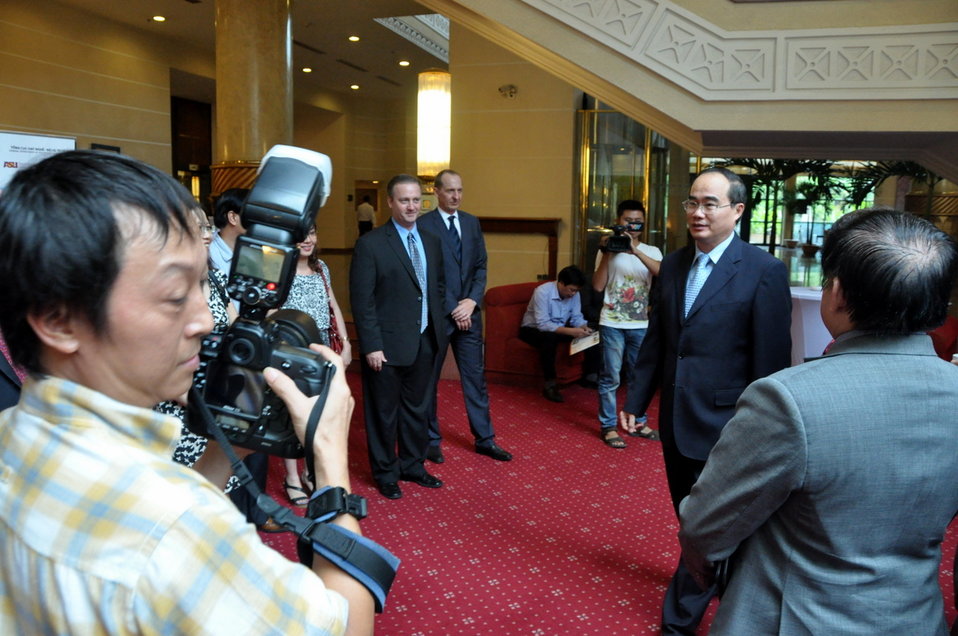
Higher Engineering Education Alliance Program Expansion Launch

Hanoi, August 20, 2012.